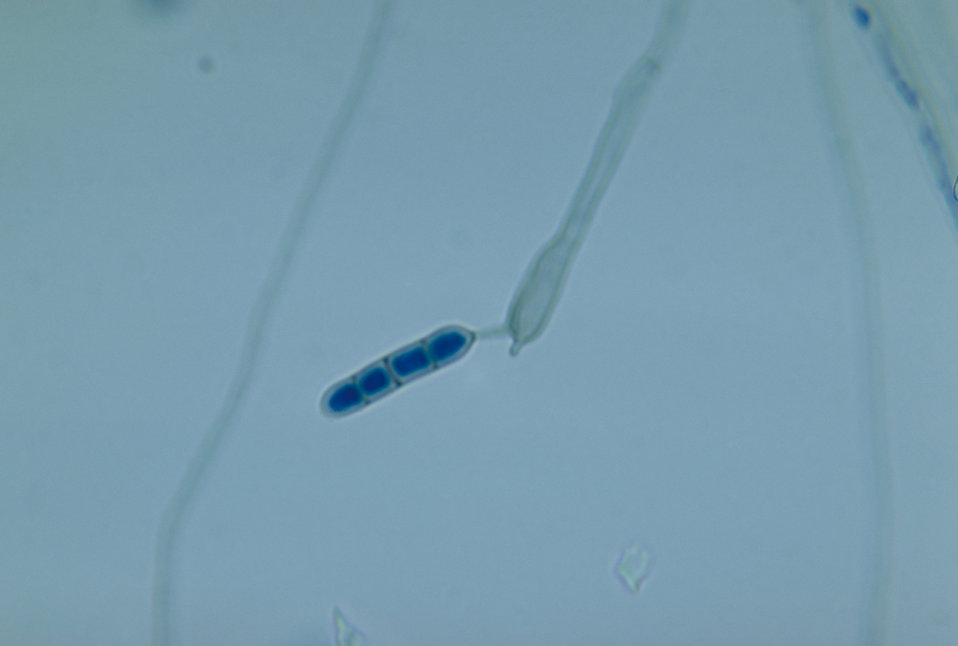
This micrograph shows a conidiophore of the fungus Cladosporium tschawtschae, formerly Heterosporium tschawtschae.